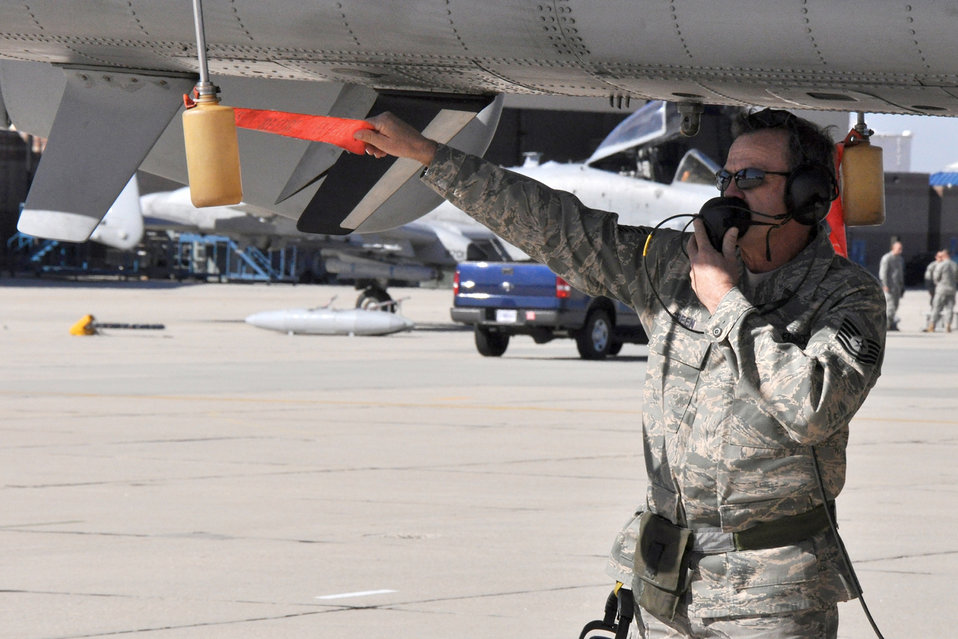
Hawgsmoke 2010

Tech. Sgt. Kenneth Green checks the engine fuel overflow of an A-10 Thunderbolt II Oct. 13, 2010, at Gowen Field in Boise, Idaho. The Hawgsmoke competition this year involved 40 jets and 72 pilots from 18 different units. Sergeant Green is an A-10 aircraft mechanic with the Air Force Reserve Command's 717th Aircraft Maintenance Squadron at Barksdale Air Force Base, La.